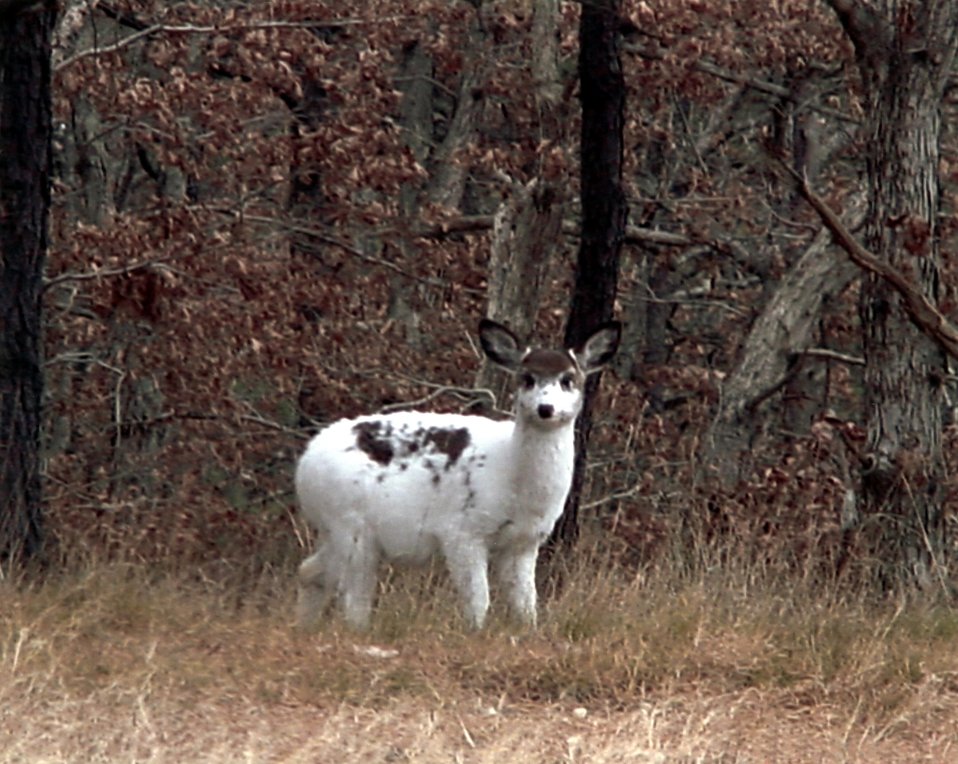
A DEER AT THE UPTON ECOLOGICAL RESEARCH RESERVE.

THE UPTON ECOLOGICAL RESEARCH RESERVE AT BROOKHAVEN NATIONAL LABORATORY IS AN AREA OF 530 ACRES COMMITTED TO THE PRESERVATION OF A UNIQUE PINE BARRENS ECOSYSTEM. THE AREA OF FORESTS AND WETLANDS PROVIDES A HOME TO MORE THAN 220 SPECIES OF PLANTS AND 162 SPECIES OF MAMMALS, BIRDS, REPTILES AND AMPHIBIANS. THE ECOSYSTEM IS A HABITAT FOR 27 ENDANGERED, THREATENED, OR SPECIES OF SPECIAL CONCERN.